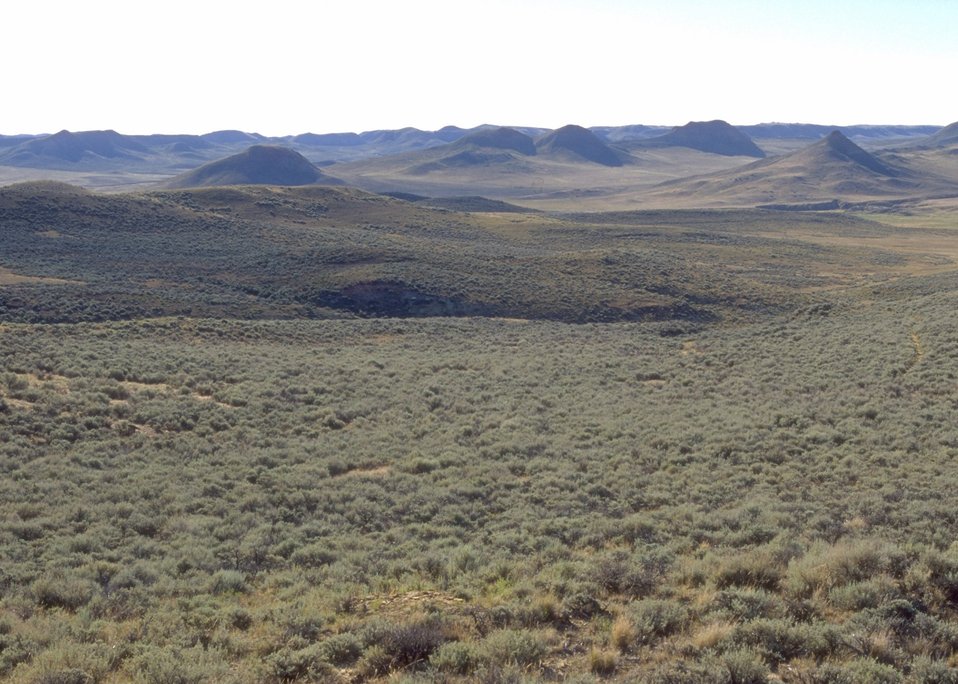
Landscape near Dry Creek Petrified Tree Area, Buffalo Field Office